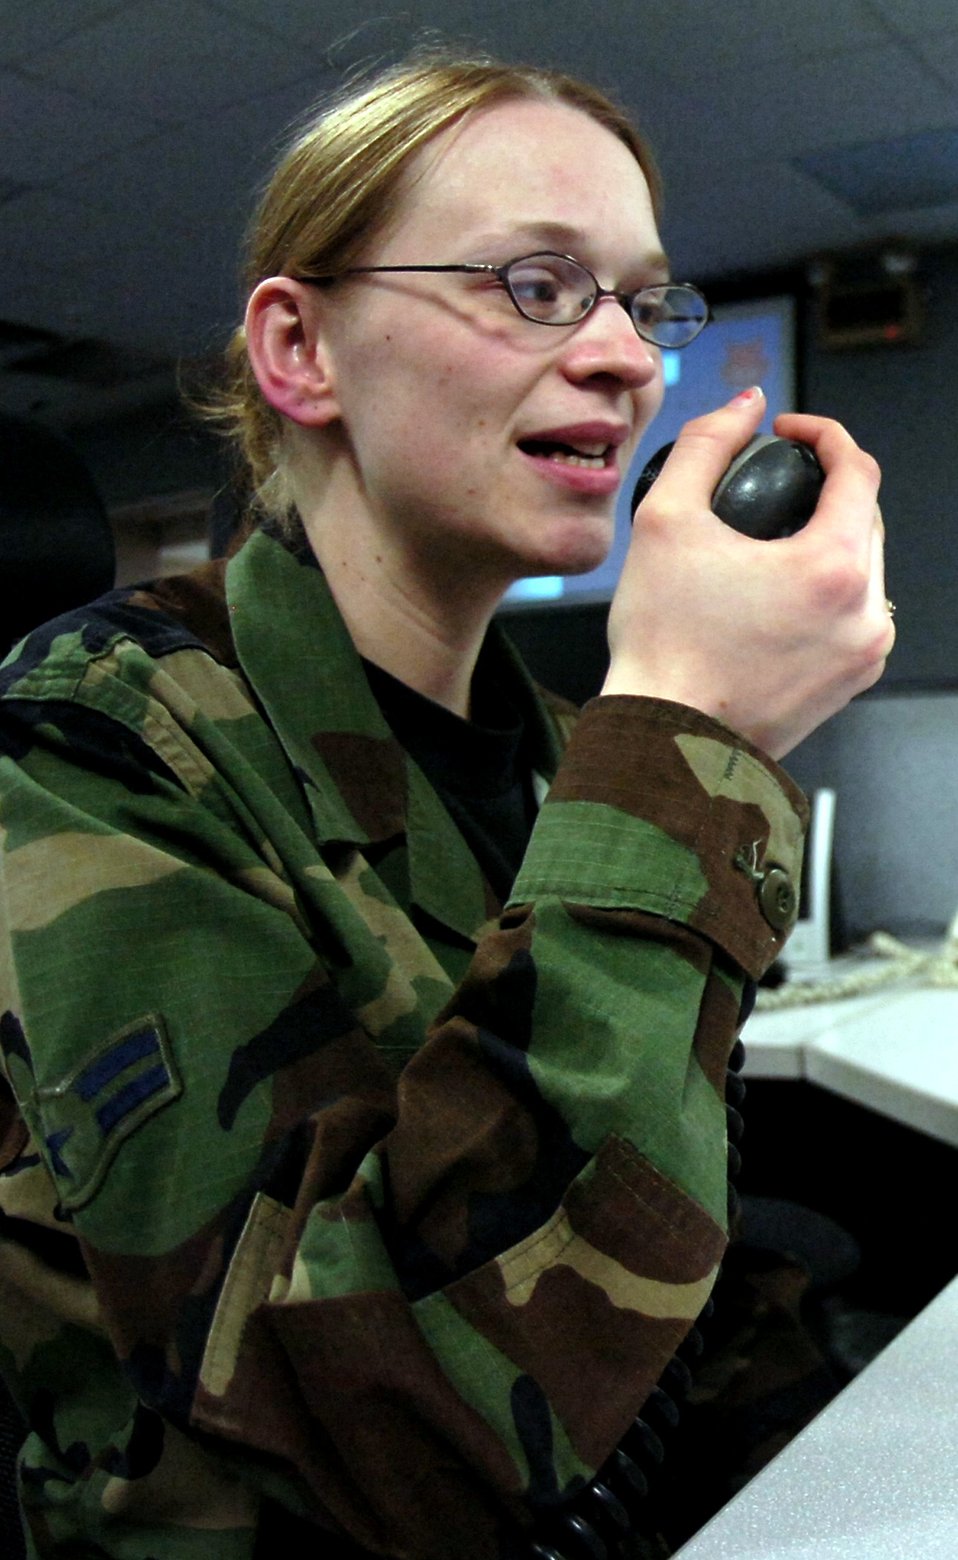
Andrews radio operators assist crewmembers worldwide

Airman 1st Class Corina Arangure talks from the 789th Communications Squadron's Centralized Network Control Station at Andrews Air Force Base, Md., with an operator at Airfield Portugal. Airman Arangure is a radio operator assigned to the CNCS.